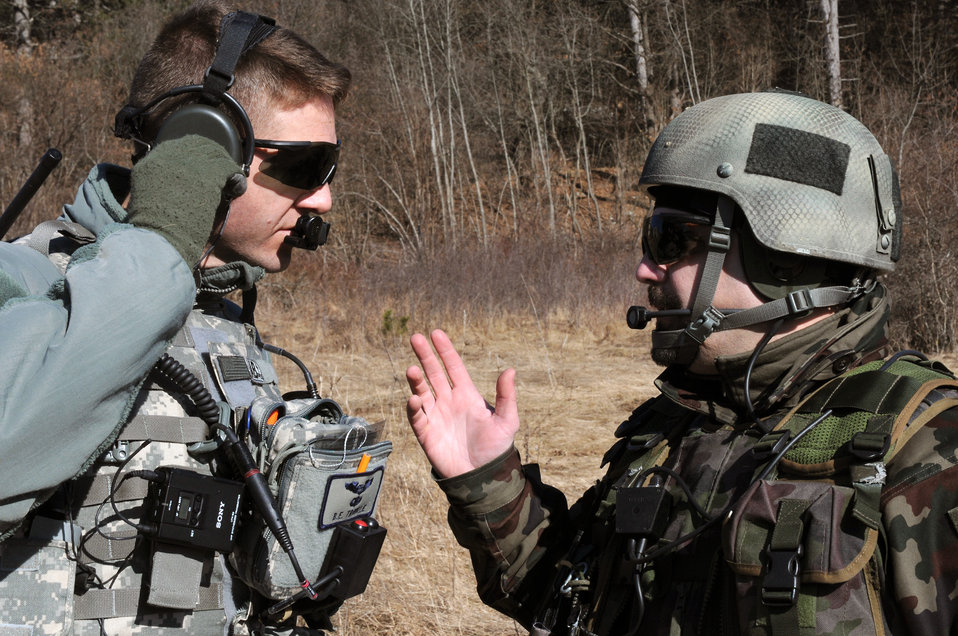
US, Slovenian TACP training

Maj. Bryan Trinkle discusses close-air-support training scenerios with Slovenian army Sgt. 1st Class Sergej Savov during a NATO coalition combat-capability training exercise at Pocek Range Feb. 2, 2011. in Postojna, Slovenia. The exercise consisted of close-air-support training between Airmen from Aviano Air Base, Italy, and Slovenian army joint terminal attacks controllers and tactical air control party operators, as well as Slovenian PC-9M aircrews. Major Tinkle the 8th Air Operations Support Squadron operations officer and a JTAC and Sergeant Savov is a1st Brigade TACP leader.